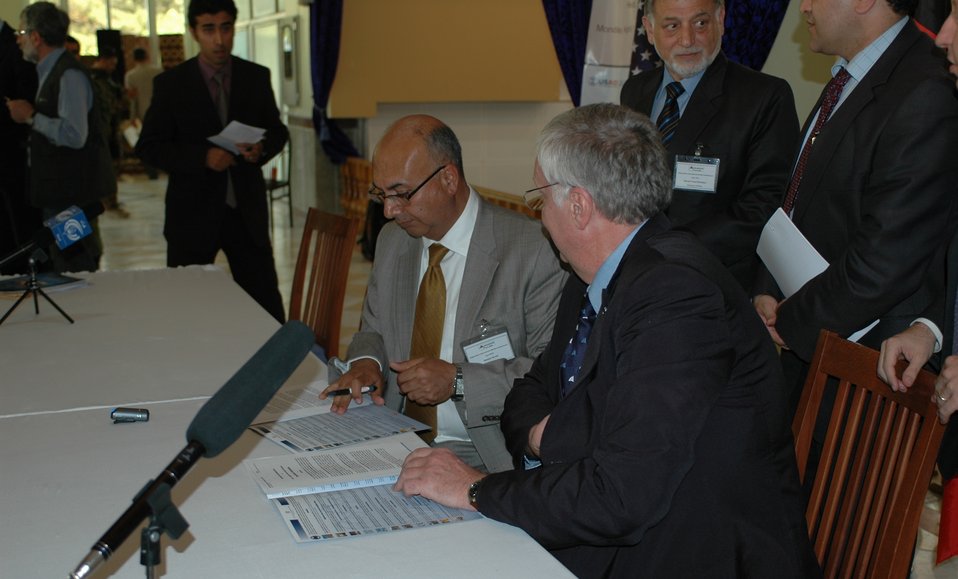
Signing an MOU for a one year knowledge sharing partnership.